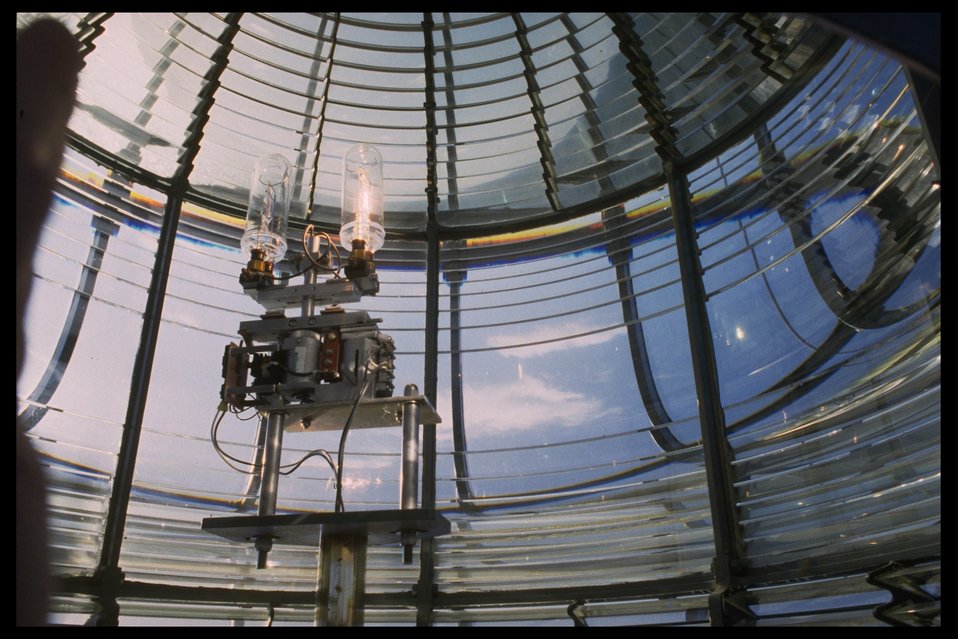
The lightbulb (1000 watt lens) on the interior of the Yaquina Head lighthouse.